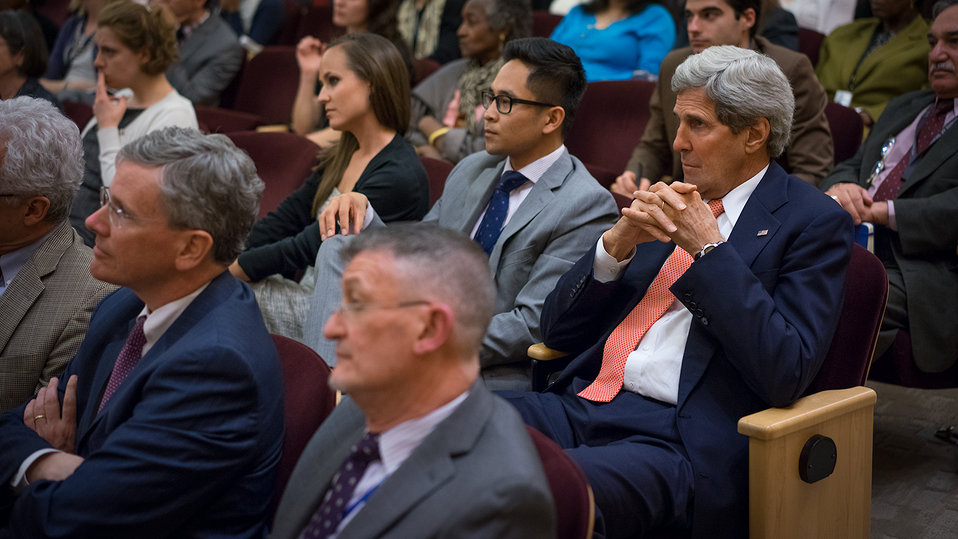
Secretary Kerry Watches His Daughter, Dr. Vanessa Kerry, Speak on Health Diplomacy

U.S. Secretary of State John Kerry watches his daughter, Dr. Vanessa Kerry, Co-Founder and Chief Executive Officer of Seed Global Health, speak on 'Improving Developing Country Health Systems through the Spirit of Volunteerism,' part of the Secretary’s Office of Global Health Diplomacy (S/GHD) Speaker Series, at the U.S. Department of State in Washington, D.C., on April 22, 2014.